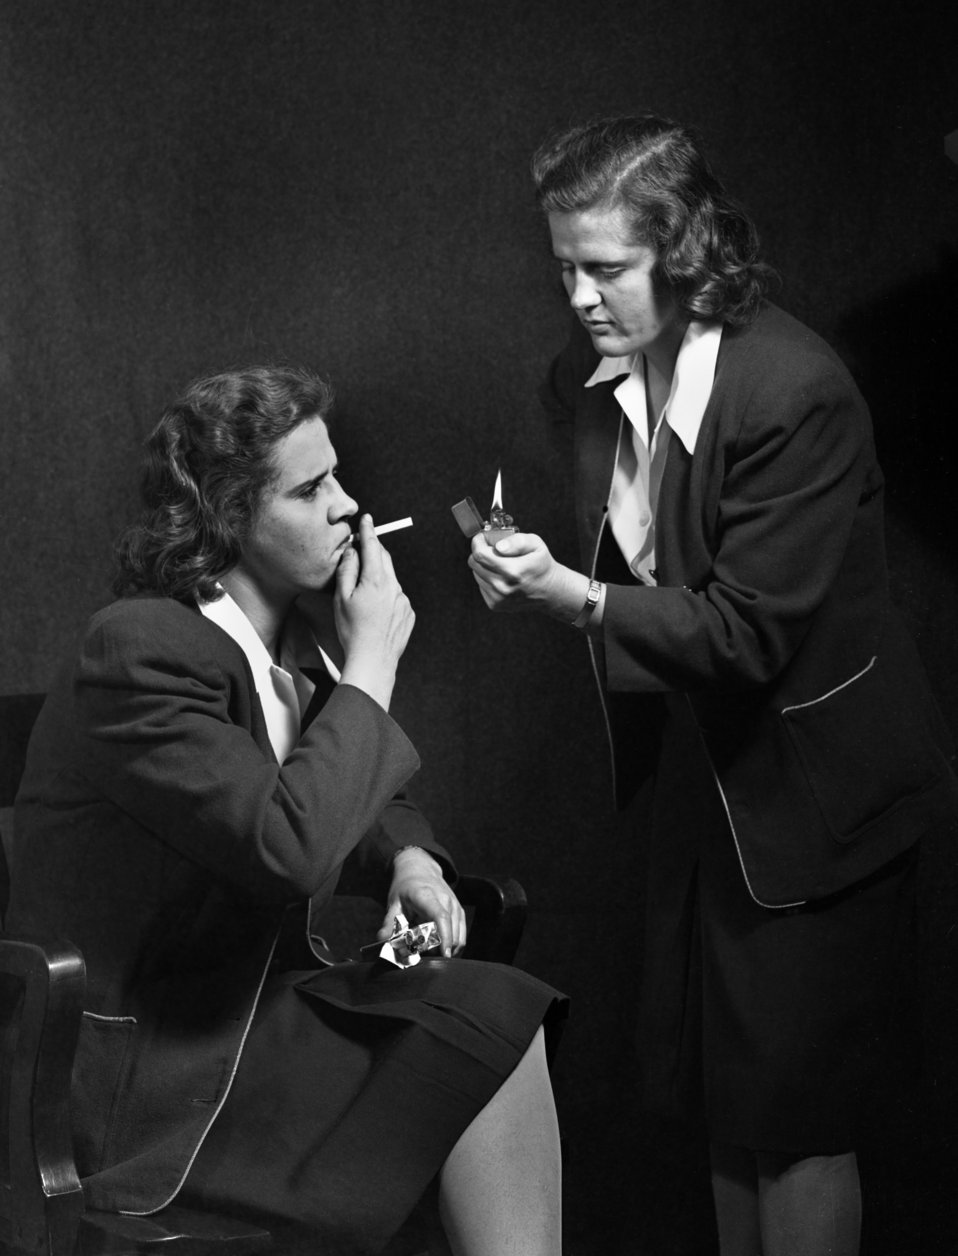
Lillian Stokes 'Double of Nothing' Test Shot Oak Ridge 1948

4444 DOE Photo Ed Westcott 1-1-1948 Oak Ridge Tennessee